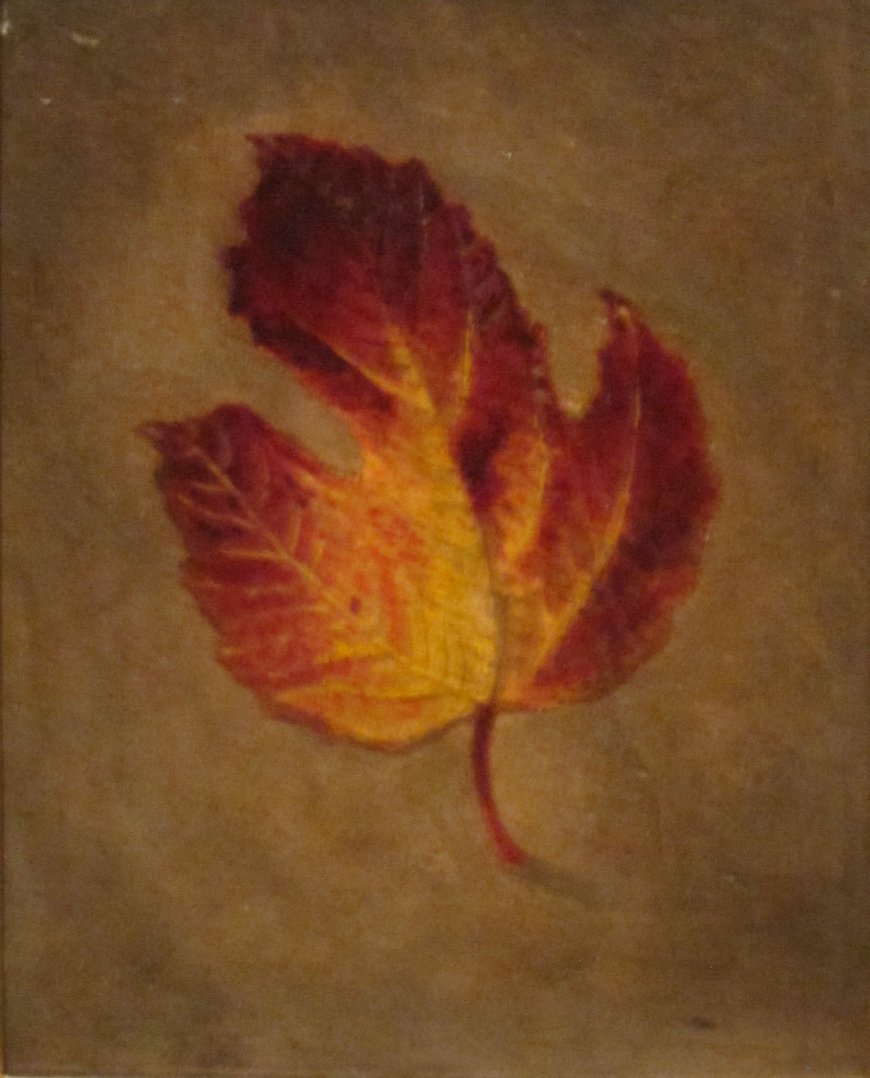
'Maple Leaf' by Edward Edmondson, Jr., Dayton Art Institute